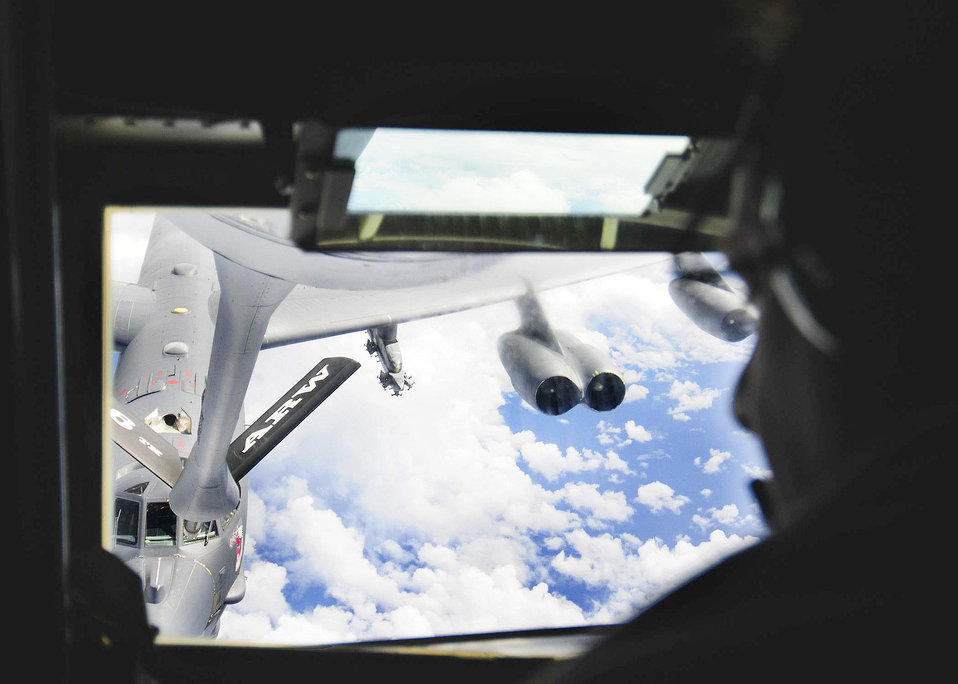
Gas at 30,000 feet

Tech. Sgt. Riccardo Bonicelli refuels a B-52 Stratofortress from a KC-135 Stratotanker during Exercise Green Lightning Sept. 22, 2009, over the Pacific Ocean. Green Lightning showcases the bomber?s long range strike capability. Sergeant Bonicelli is a boom operator from the 77th Air Refueling Squadron at Seymour Johnson Air Force Base, N.C.